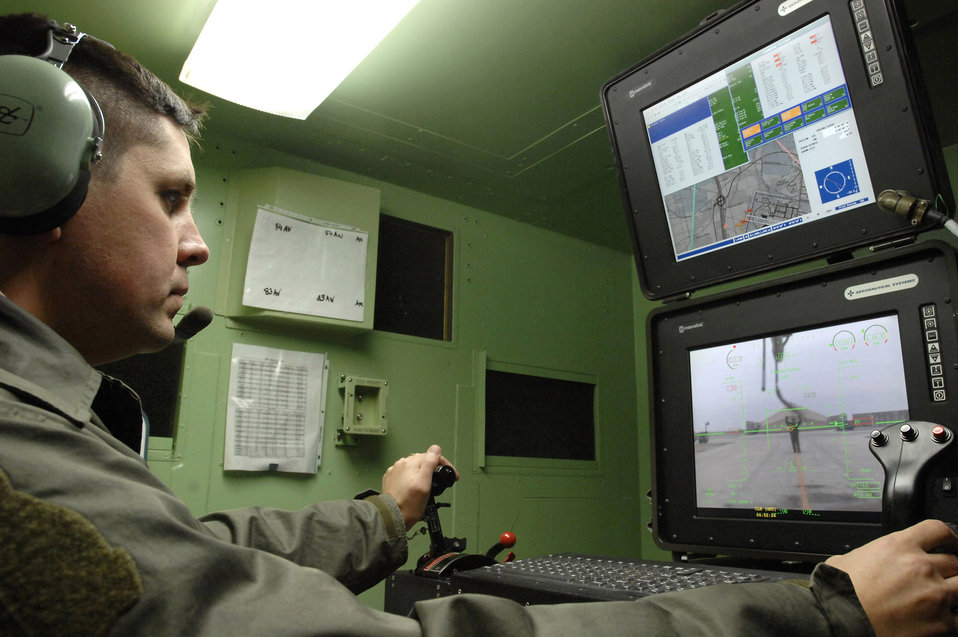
Predators keep vigilant eye on Iraq

Royal Air Force officer Maj. Kevin Gambold monitors and pilots an MQ-1 Predator unmanned aerial vehicle following a mission Jan. 10 at Ali Base, Iraq. Major Gambold, who is part of a military personnel exchange program and is assigned to the 15th Reconnaissance Squadron, Creech Air Force Base, Nev., is currently deployed to the 361st Expeditionary Reconnaissance Squadron at Ali Base as the squadron commander.